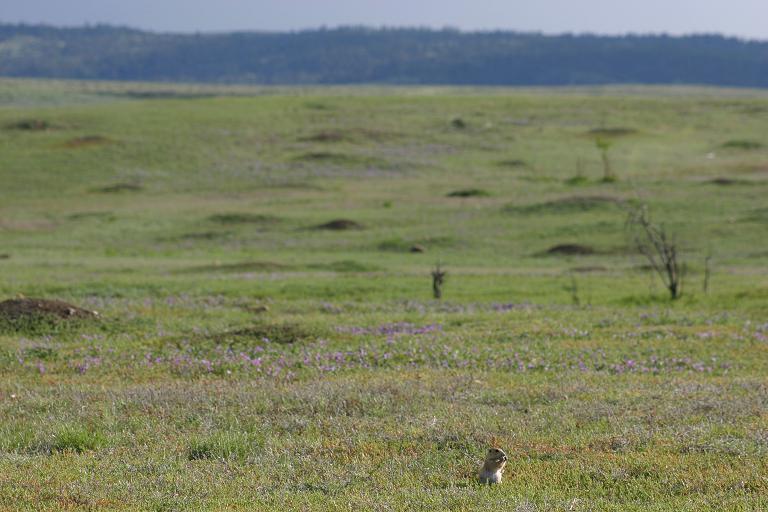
Black-tailed Prairie Dog Town

Prairie dogs live in colonies and many other species such as burrowing owls, mountain plovers and black-footed ferrets are associated with prairie dog towns.